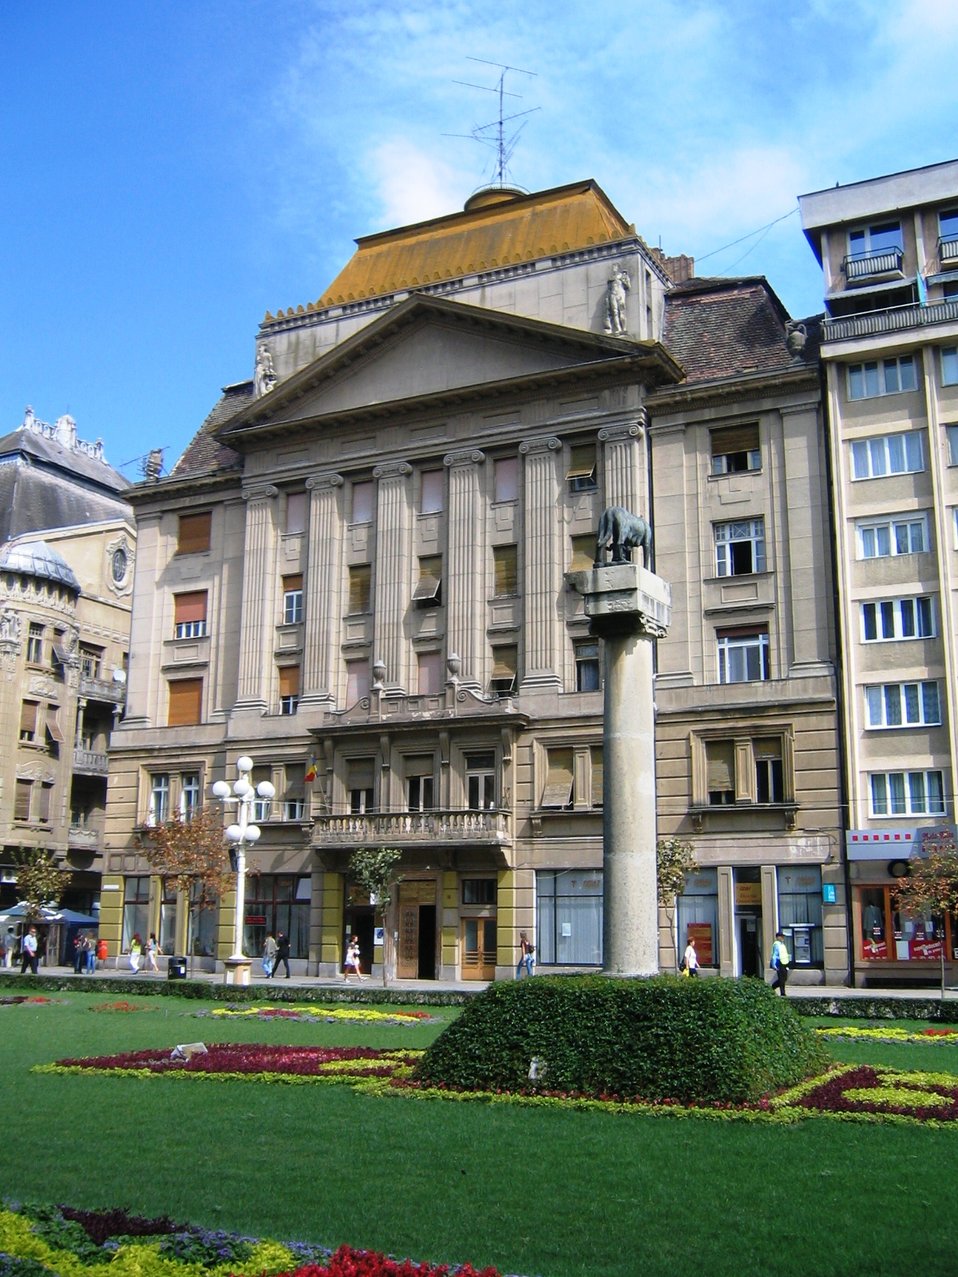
Română: Camera De Comert (Timişoara).